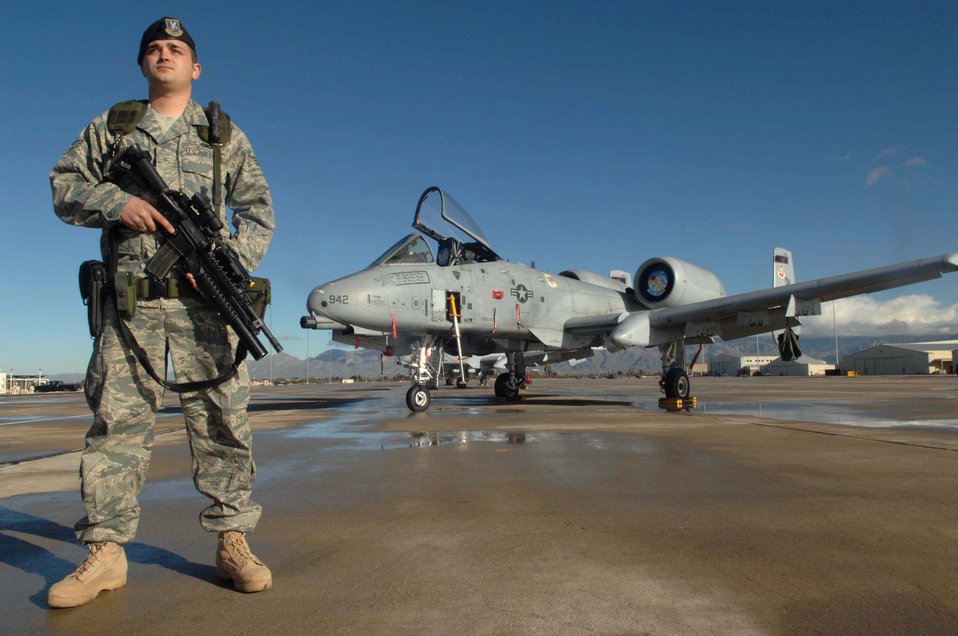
Force protection

Senior Airman Mario Fajardo stands guard Jan. 25 at Davis-Monthan Air Force Base. The 355th Security Force Squadron is responsible for the worldwide force protection and security of seven flying squadrons and 4,400 tactical and stored aircraft on Davis-Monthan AFB worth more than 32.3 billion dollars. Airman Fajardo is with the 355th Security Forces Squadron.